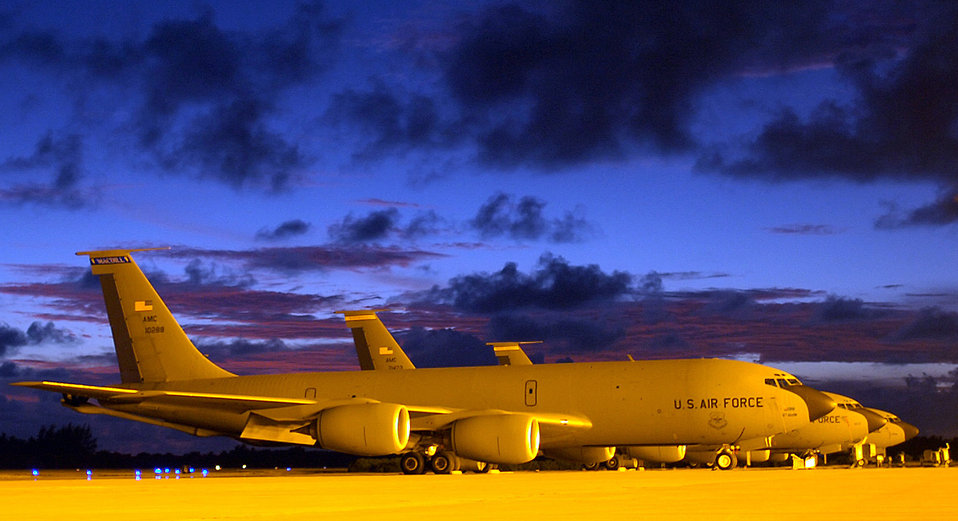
Parked and ready

These KC-135 Stratotankers parked on the ramp of a forward operating location Sunday, April 23, 2006, provide fuel to B-52 Stratofortresses that fly in support of Operation Enduring Freedom.